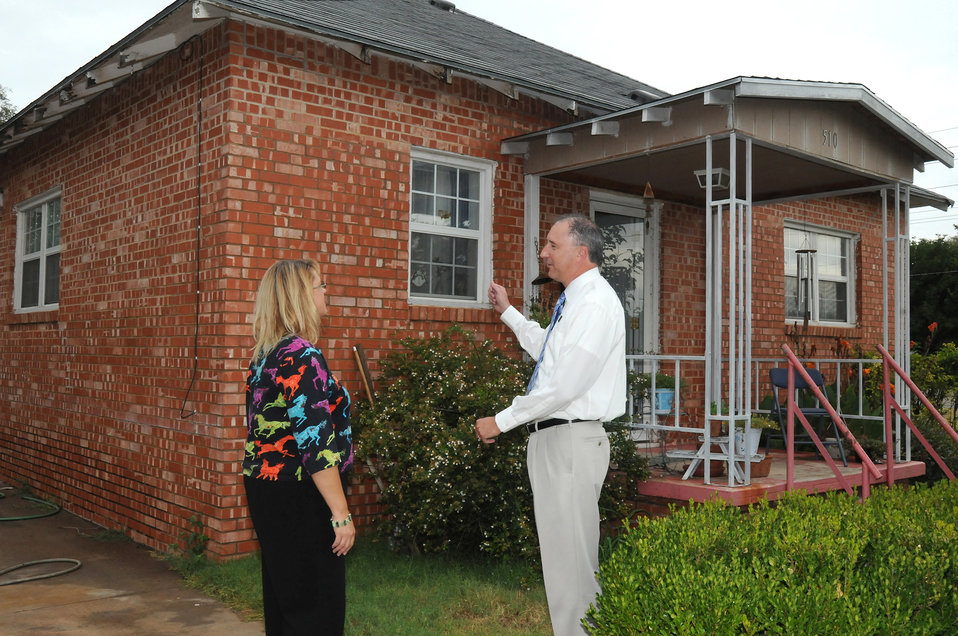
U.S. Department of Agriculture (USDA) Rural Development (RD) employees inspect the home of Ms. Shirley Ford in Hollis, OK. Ms. Shirley Ford (44) on August 13, 2009. Ms. Hollis had planned to use her savings for a down payment on a house but had a heart attack at age 43 and had to use all her savings to pay her medical bills because she had no health insurance. RD assisted Ms. Ford with a low interest loan for the down payment on this home and helped with acquiring additional assistance from REI, a non-profit organization.